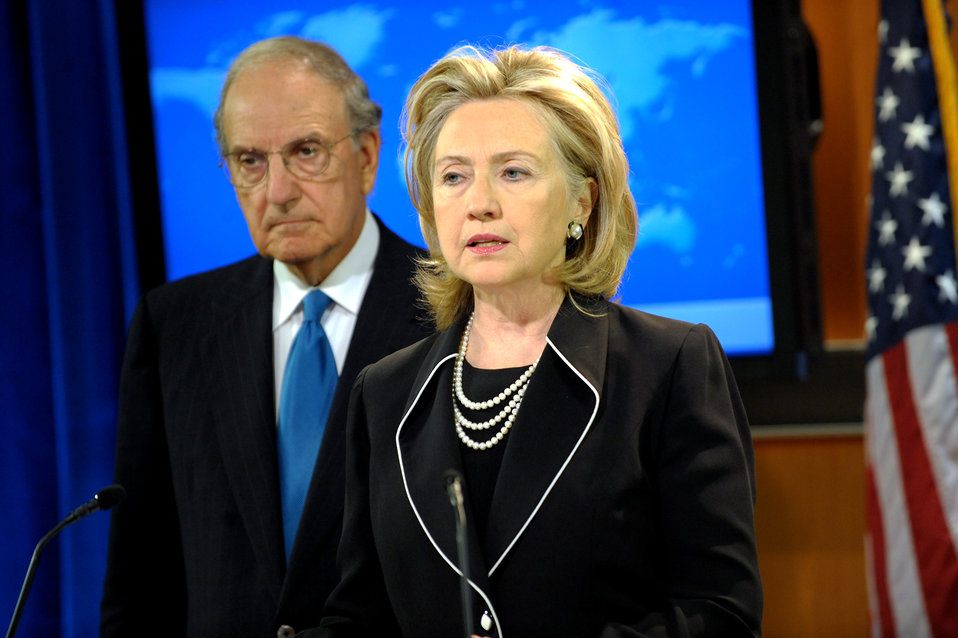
Secretary Clinton Briefing on Middle East Peace Process

U.S. Secretary of State Hillary Rodham Clinton briefs reporters on the Middle East Peace Process at the U.S. Department of State in Washington, DC, August 20, 2010. She is joined by Special Envoy for Middle East Peace Talks Senator George Mitchell.